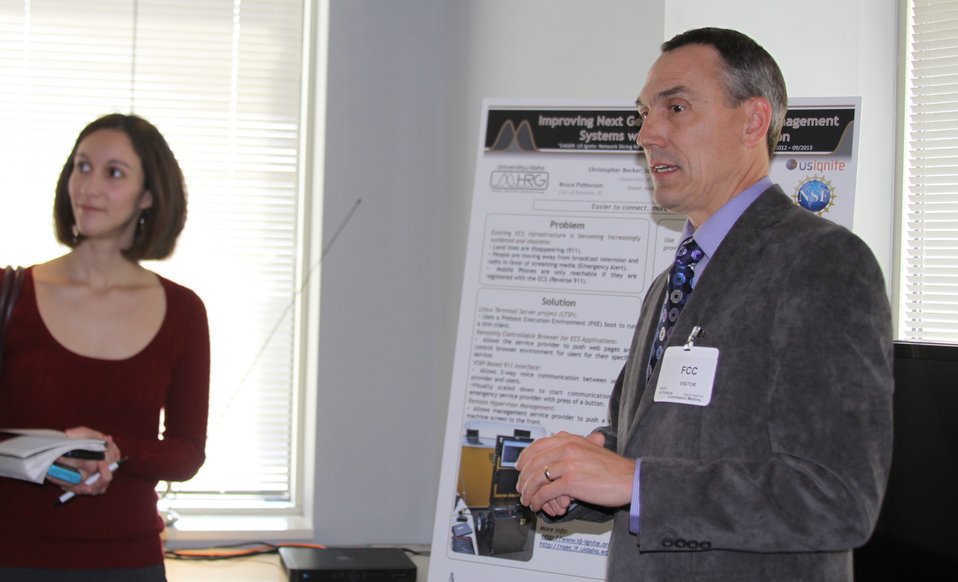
Technology Experience Center Demonstration